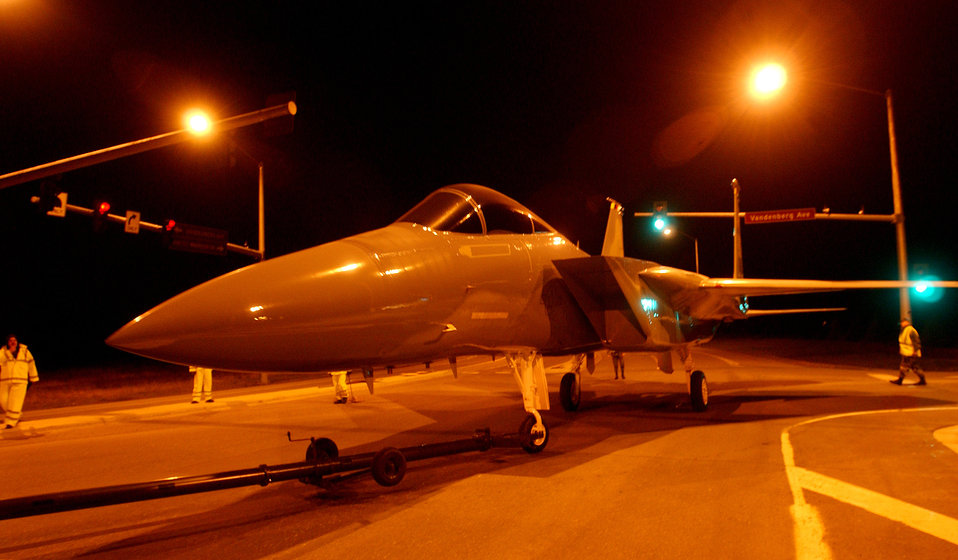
Not-so-static display

ELMENDORF AIR FORCE BASE, Alaska -- An F-15 Eagle is towed through several intersections on its way to the base where it became the first static display to sit outside the main gate here. It was towed across base and down about one mile of a busy highway. With help from the local police department, the highway was shut down for less than an hour for towing of the aircraft.